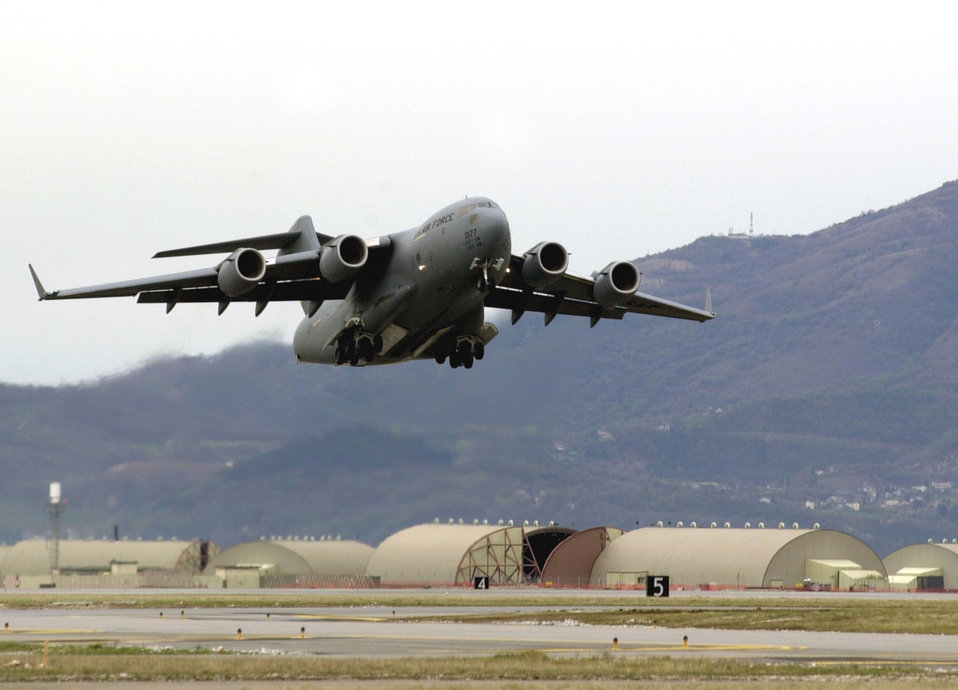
C17s aiding with efforts in Lebanon

C-17 Globemaster III aircraft similar to the one in the photo are delivering aid and equipment to Cyprus for Americans who have left Lebanon.